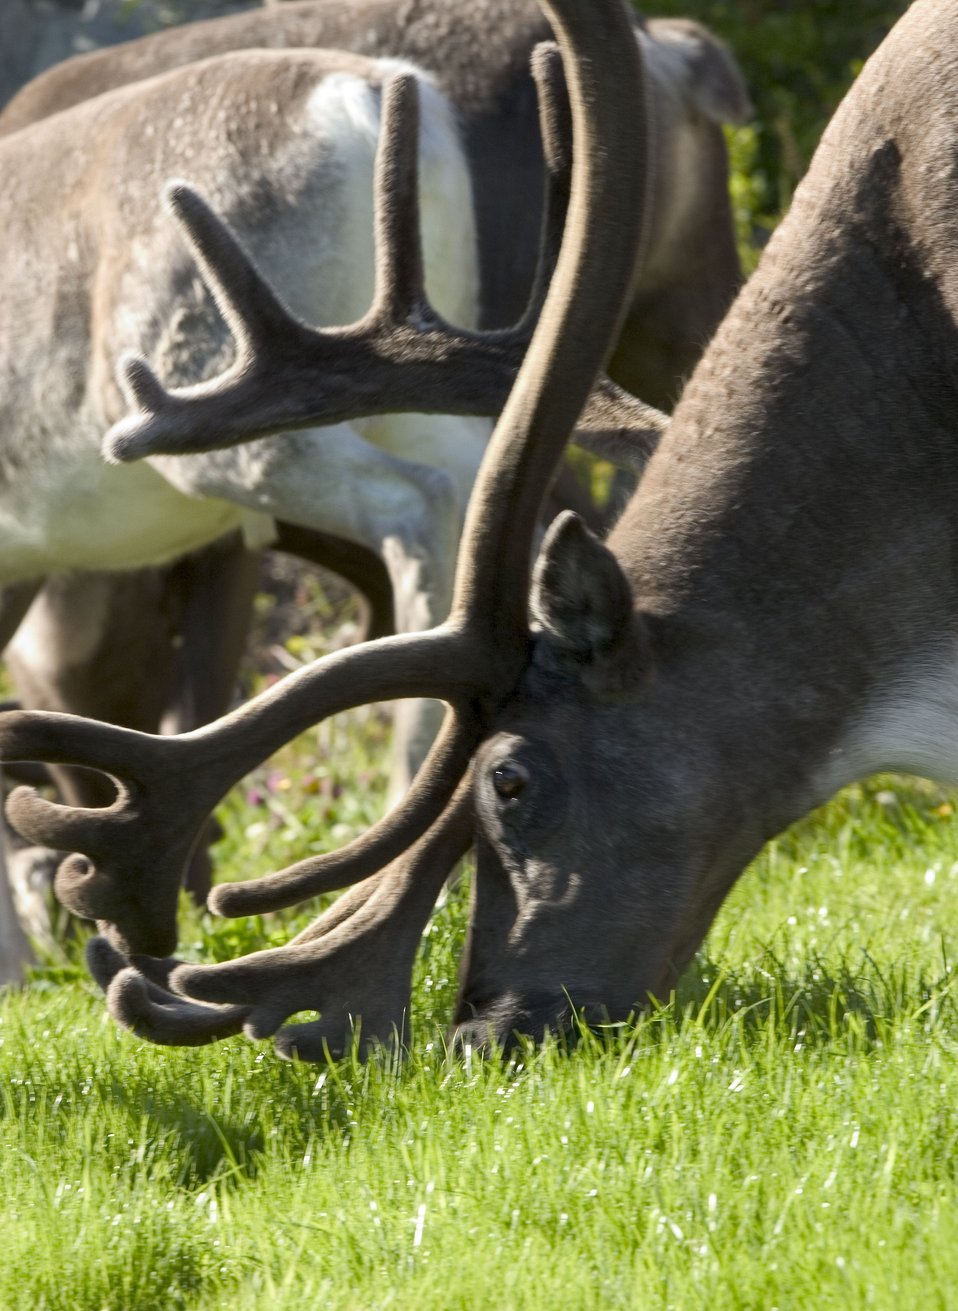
Reindeer at Kirkenes.